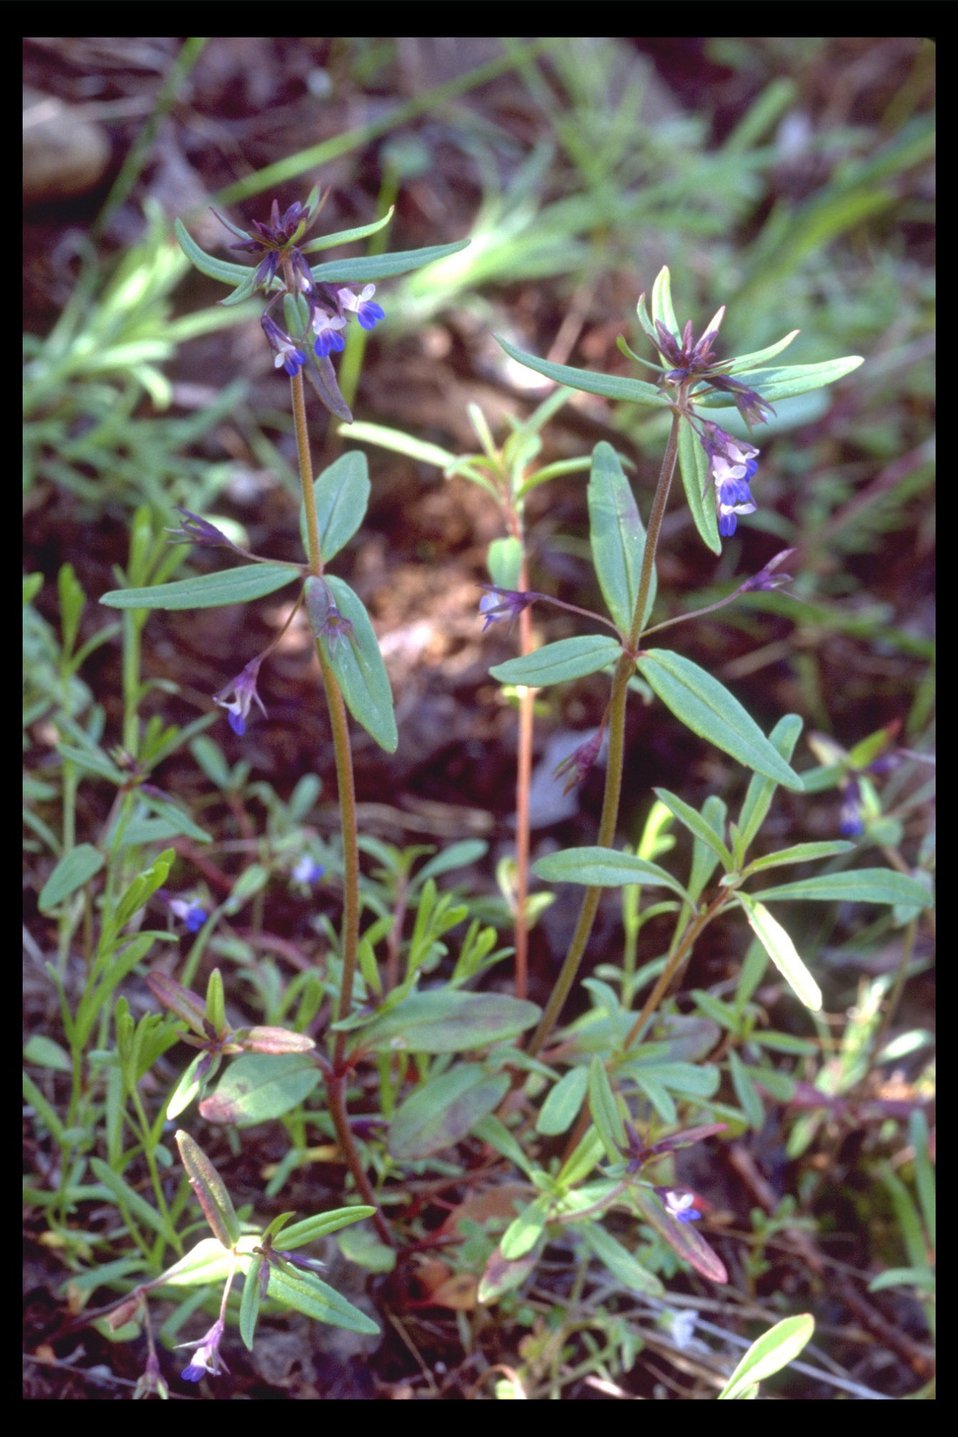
Small-Flowered Blue-eyed Mary (Collinsia parviflora) at Upper Table Rock.